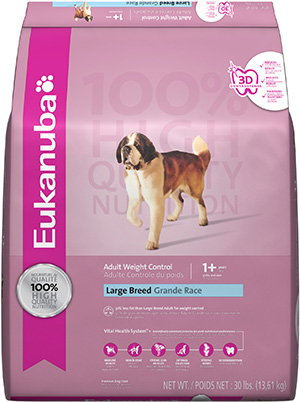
RECALLED – Dog and Cat foods - Dry

August 14, 2013 – Product Recall – P&G Voluntarily Recalls Limited Quantity of Dry Pet Food Due to Possible Health Risk.